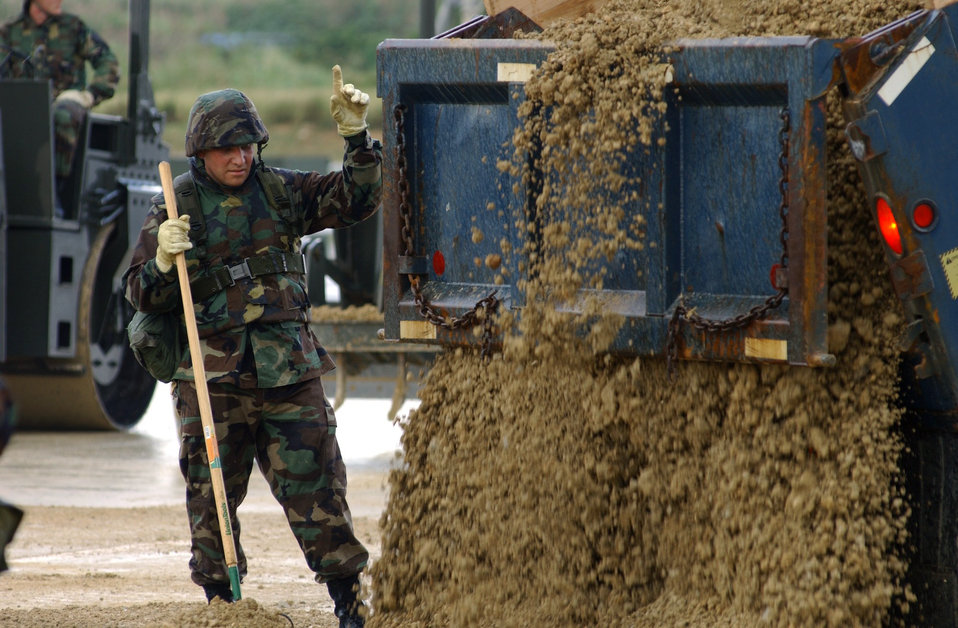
Rapid repair

KADENA AIR BASE, Japan -- Staff Sgt. James Crosley directs a dump truck during the recent Pacific Command Airfield Damage Repair Commander's Cup competition. In this event, his team had to fill a crater that was the result of a simulated missile attack. Sergeant Crosley is assigned to the 18th Civil Engineer Squadron here.